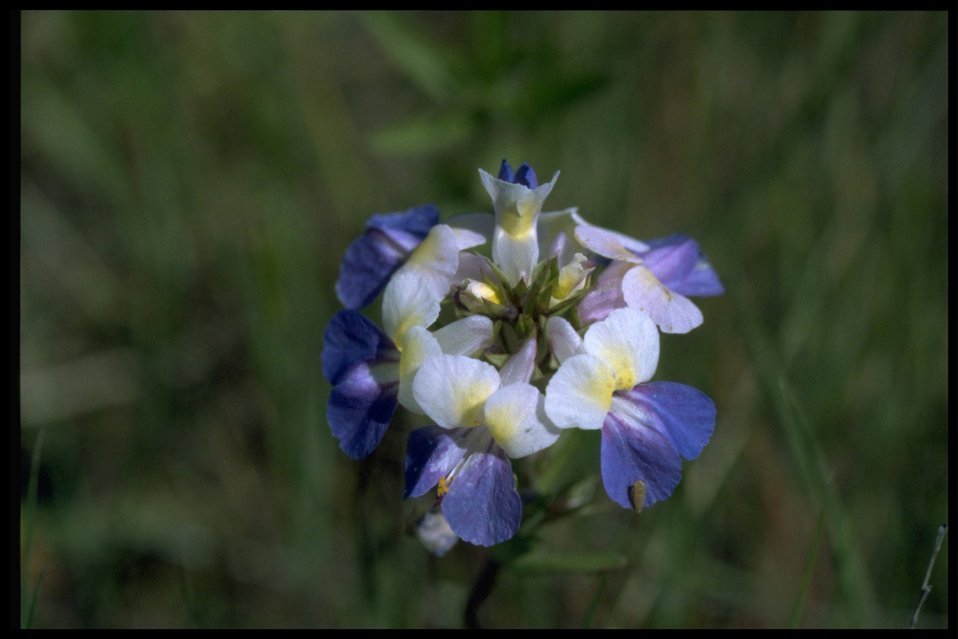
Closeup shot of Collinsia grandiflora.